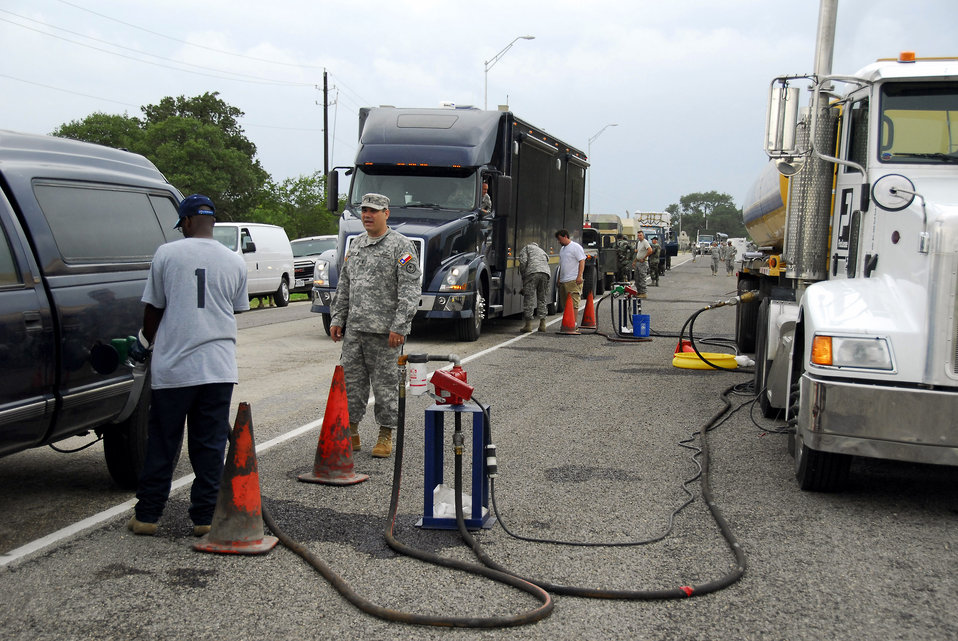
Convoy: Help is on the way!

Military forces and representatives of agencies from throughout Texas and the U.S. gathered in San Antonio and then convoyed east. More than 500 vehicles and 1,000 people headed to various locations in Southeast Texas to begin search and rescue and recovery efforts in the aftermath of Hurricane Ike.